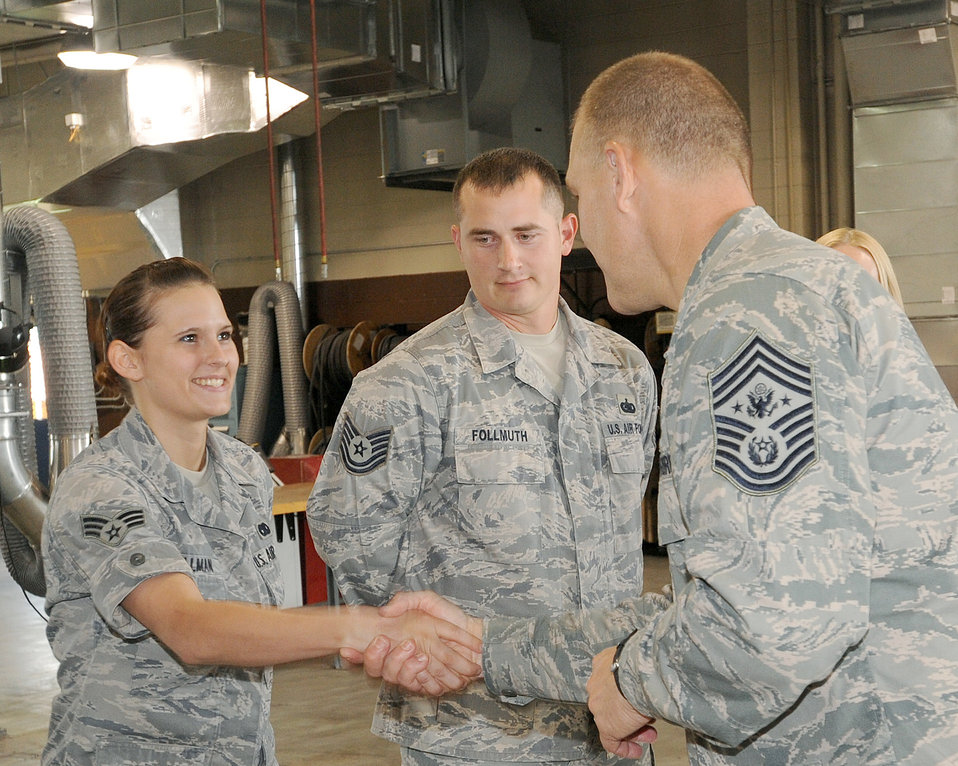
Chief master sergeant of the Air Force visits Grand Forks AFB

Senior Airman Jolene Bollman shakes hands with Chief Master Sgt. of the Air Force James A. Roy's July 15, 2010 at Grand Forks Air Force Base, N.D. Chief Roy met with Airmen from the 319th Air Refueling Wing and toured base facilities, which allowed him to see Airmen here prepare for the transition to a new mission. Airman Bollman is assigned to the 319th Logistics Readiness Squadron.